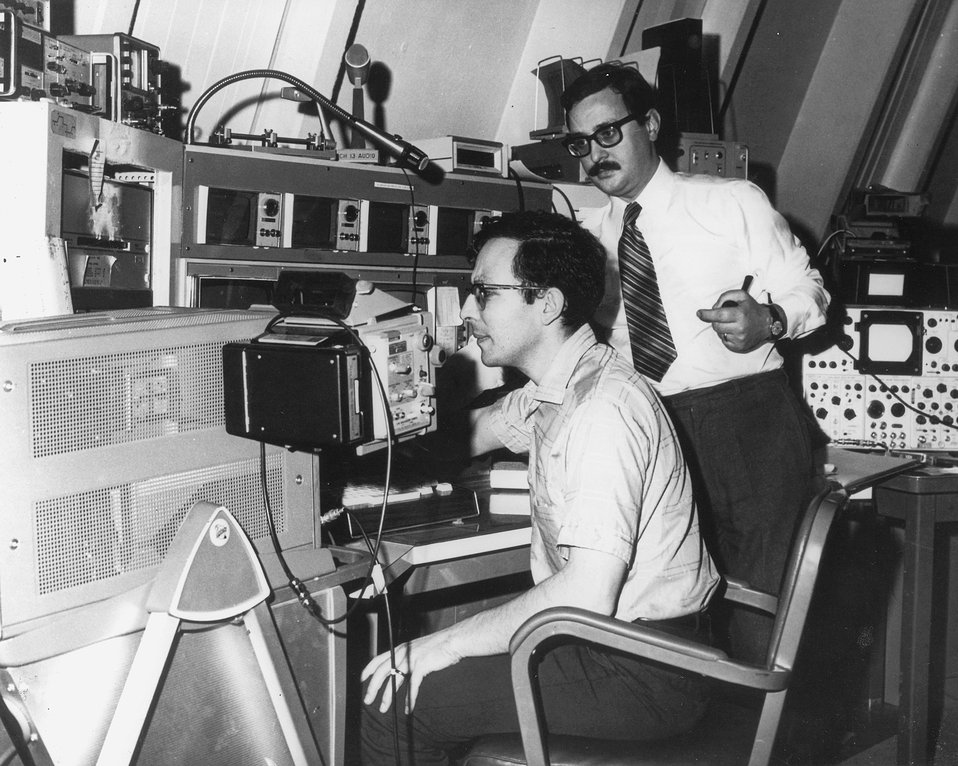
This is fifty percent greater than the original design energy of the accelerator, 200 billion electron volts, which was achieved on March 1, 1972. c.1972